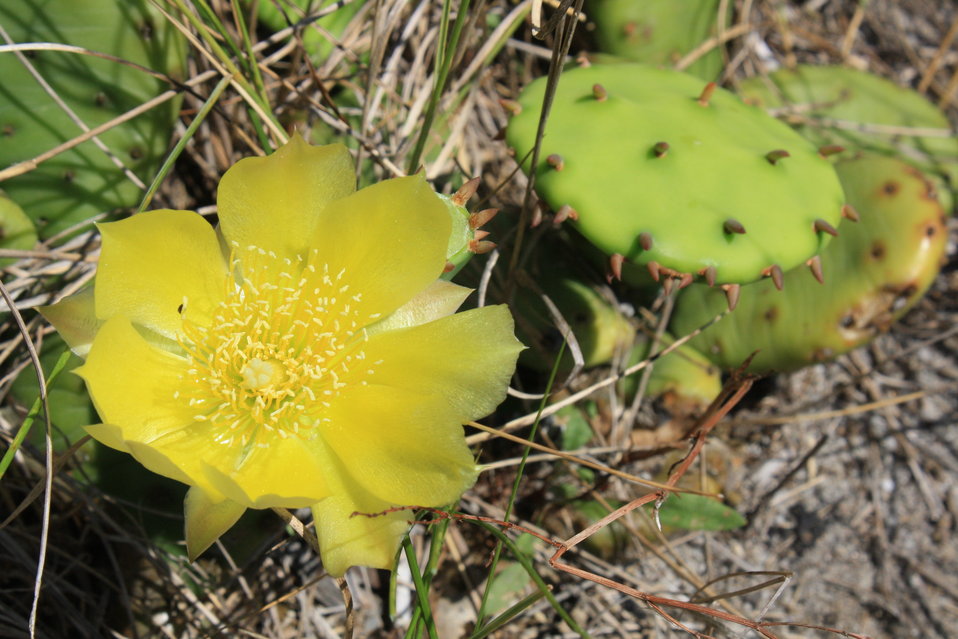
Prickly Pear

Photographed at Wertheim National Wildlife Refuge.